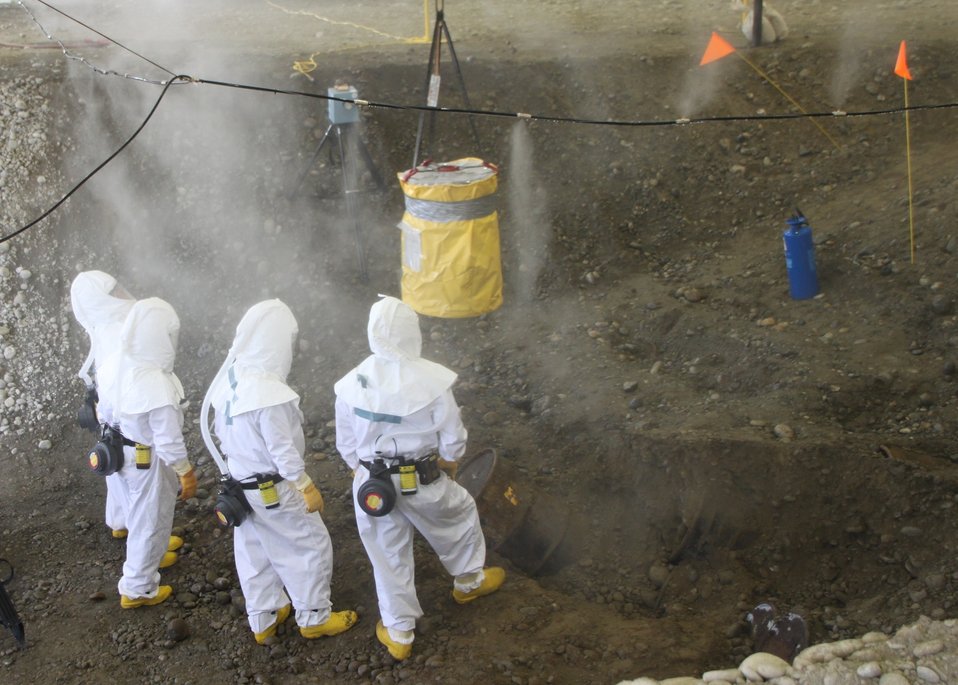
Hanford Richland Waste Cleanup

A container of waste is excavated from an underground storage trench at the Hanford Site. Recovery Act workers place the container into protective covering and it is hoisted from the trench and staged adjacent to the trench for processing.